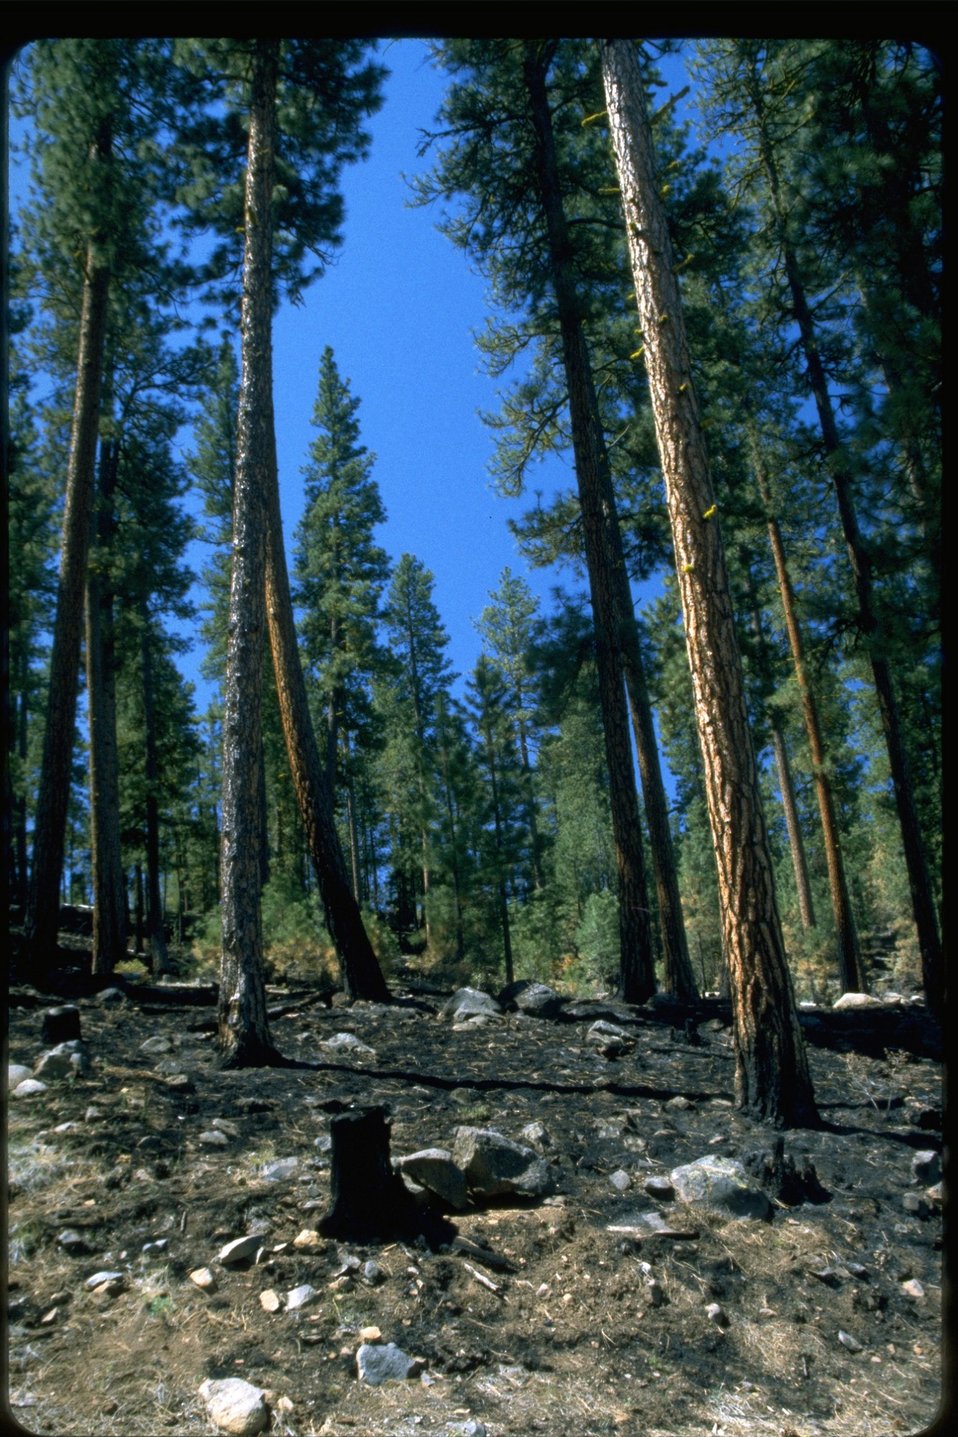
Prescribed burn area CCC (Civilian Conservation Corps) road near Barnes Valley.